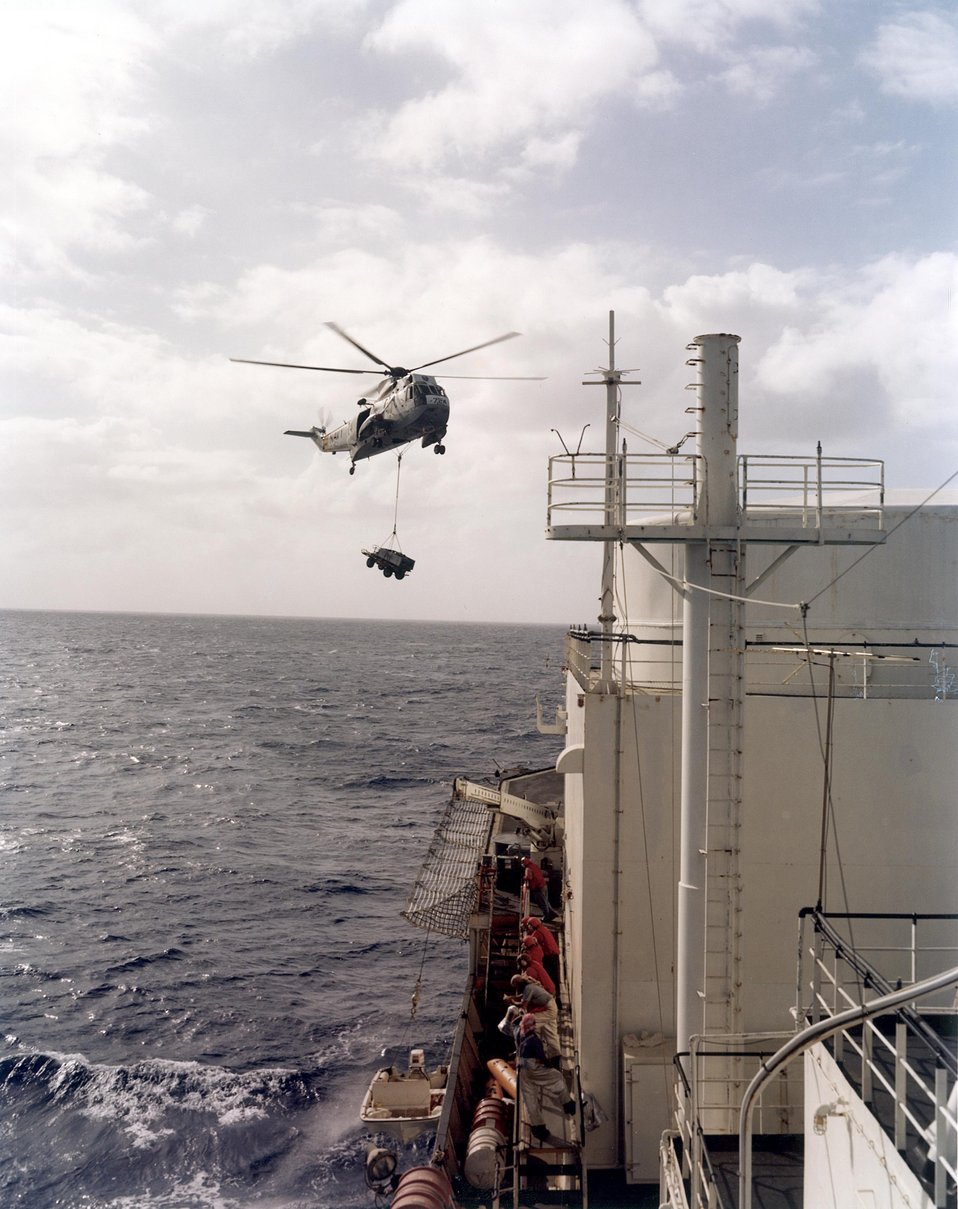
HC-1 helicopter returning to USNS Wheeling with survey equipment.
11-15-78